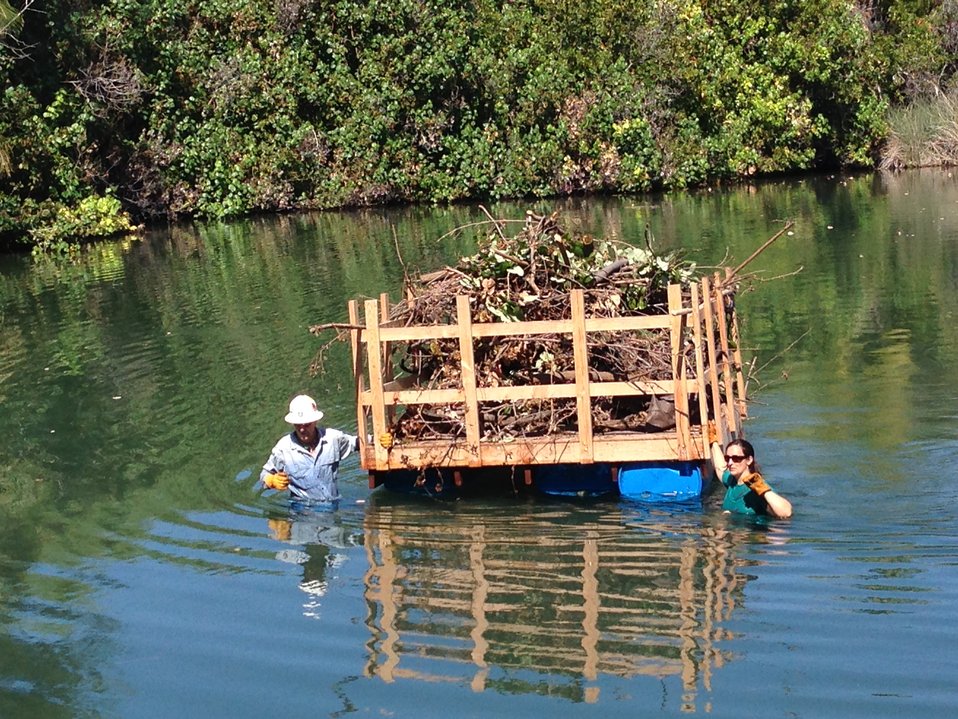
Kiholo1

Institute of Pacific Islands Forestry research ecologist Flint Hughes and Nature Conservancy employee Rebecca Most transport debris across the anchialine pool in Hawaii to a staging area where it will be chipped into mulch.